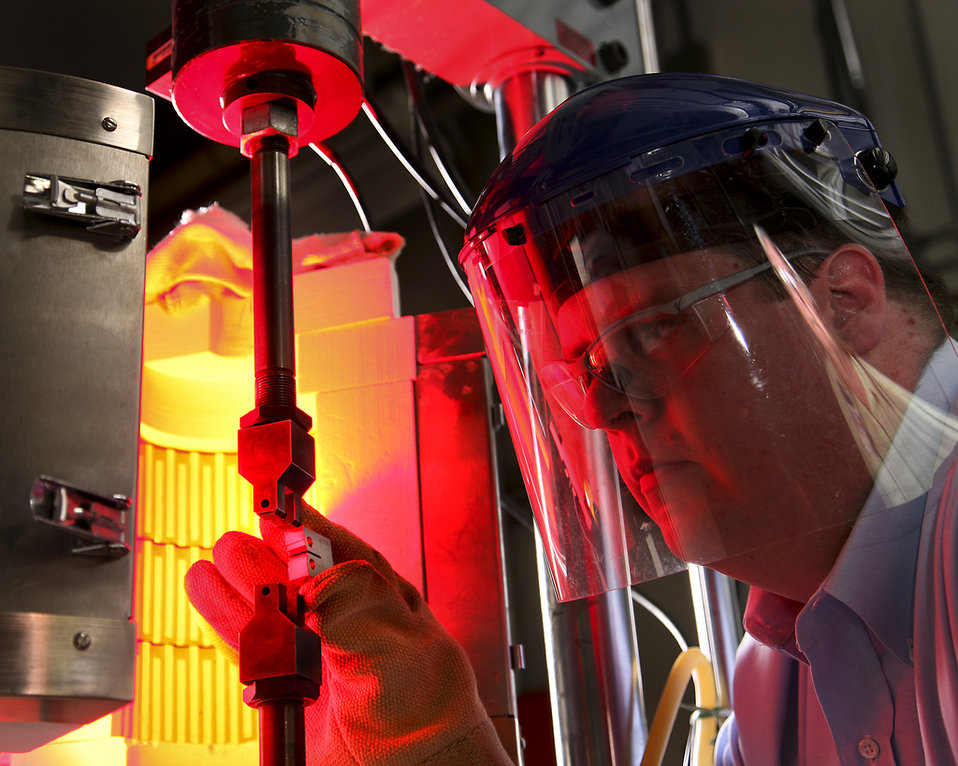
A new grade of cast stainless steel, bring tested by Jeremy Busby of ORNL , may prove useful in the ITER fusion device. A specimen is loaded into the Materials Test System, which measures fracture toughness.